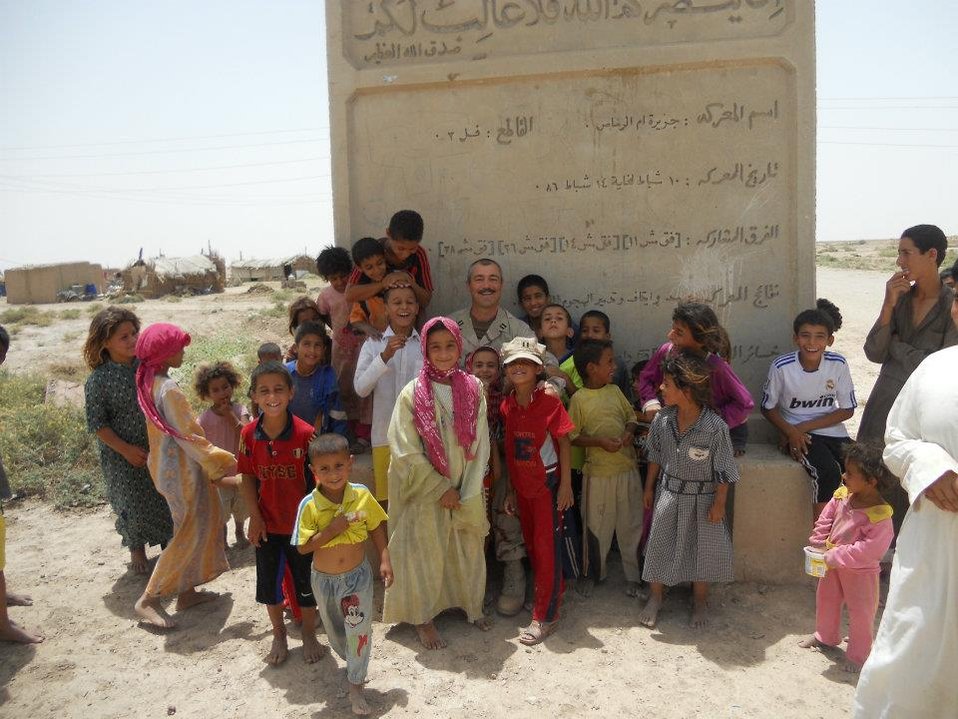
Jonathan Schafler, the Refuge Manager at Canaan Valley National Wildlife Refuge in Davis, West Virginia, recently returned from a 13-month tour of duty in Iraq with the U.S. Coast Guard. As a lieutenant for the Coast Guard and an expert in counterterrorism, he led the development and execution of the first Training and Advisory mission supporting the Iraqi Coastal Border Guard. For his “meritorious conduct in the performance of outstanding service to the United States…” while in Iraq, he was awarded the Bronze Star Medal. He has been in the Coast Guard for 24 years. Jonathan’s professionalism as a refuge manager parallels his military accomplishments. Under Refuge Manager Schafler’s leadership, the Canaan Valley National Wildlife Refuge Comprehensive Conservation Plan received this year’s “Outstanding Plan Award,” and Secretary Salazar has recently announced that landscape conservation in the Canaan Valley will be highlighted in the America’s Great Outdoors Initiative Final Report.